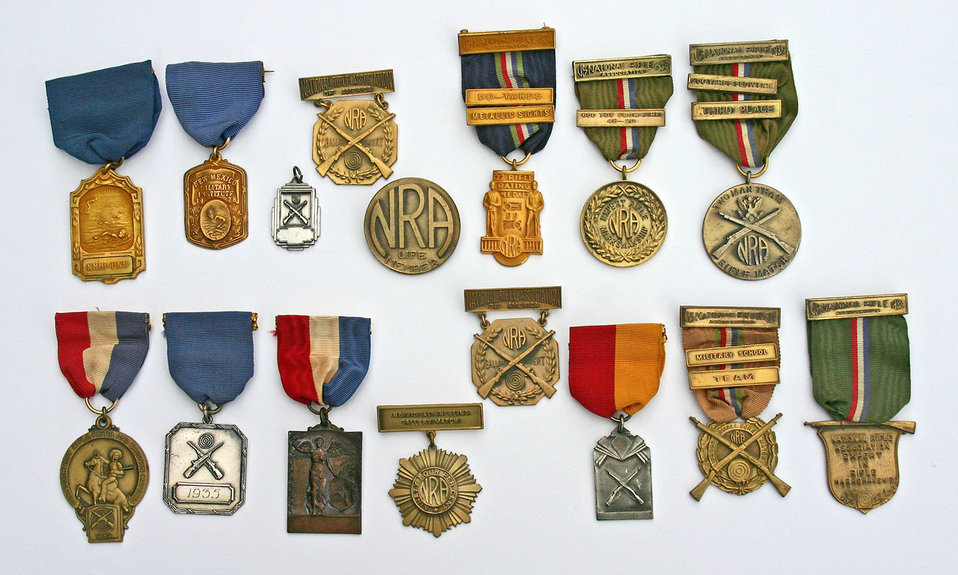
Nra and swimming medals.